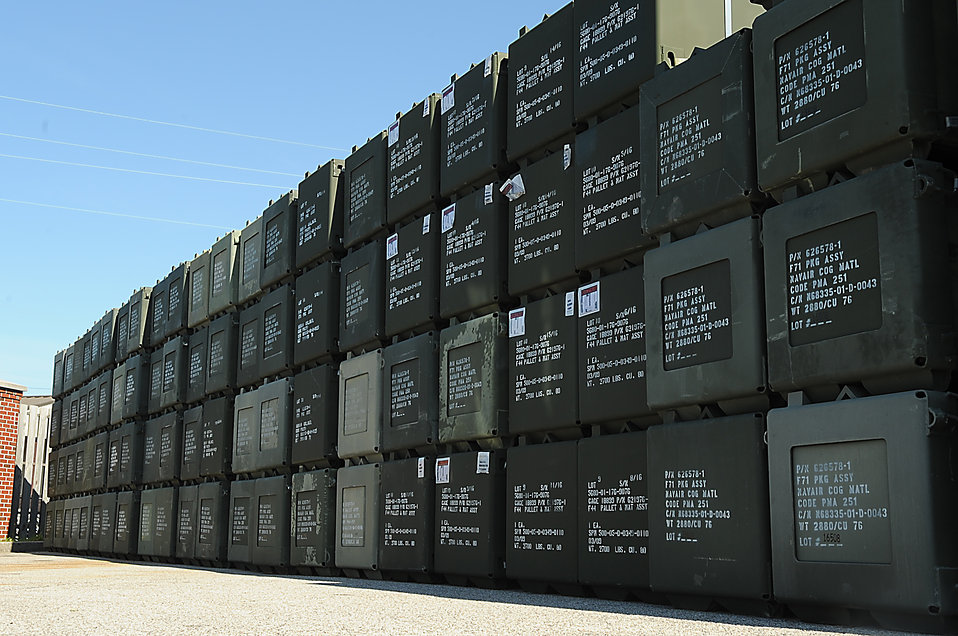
Charleston aerial port supports OEF build-up

The 437th Aerial Port Squadron at Charleston Air Force Base, S.C., will ship approximately 32 acres of matting to locations throughout the Middle East in support of Operation Enduring Freedom.